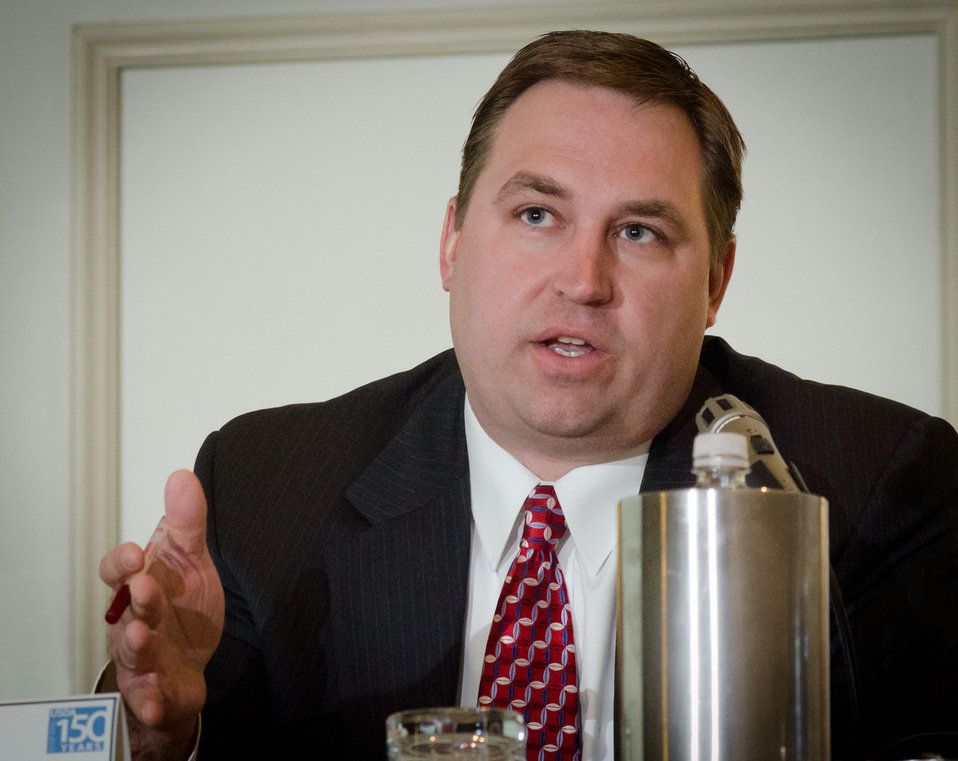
Federal Reserve Bank of Kansas, City Omaha Branch Executive Vice President Jason Henderson, responds to a question, during “The Farm Income Outlook for 2012” session of the Food Prices & Farm Income Track, at the 2012 Agricultural Outlook Forum, “Moving Agriculture Forward, Growing, Innovating and Celebrating 150 Years.” held at the Crystal Gateway Marriott Hotel, Arlington, Virginia, on Friday, February 24, 2012. The session focused on general measures of the financial well being of the farm economy, including USDA’s official outlook for farm income, the distribution of income across farm households, and the competitiveness of the rural economy.